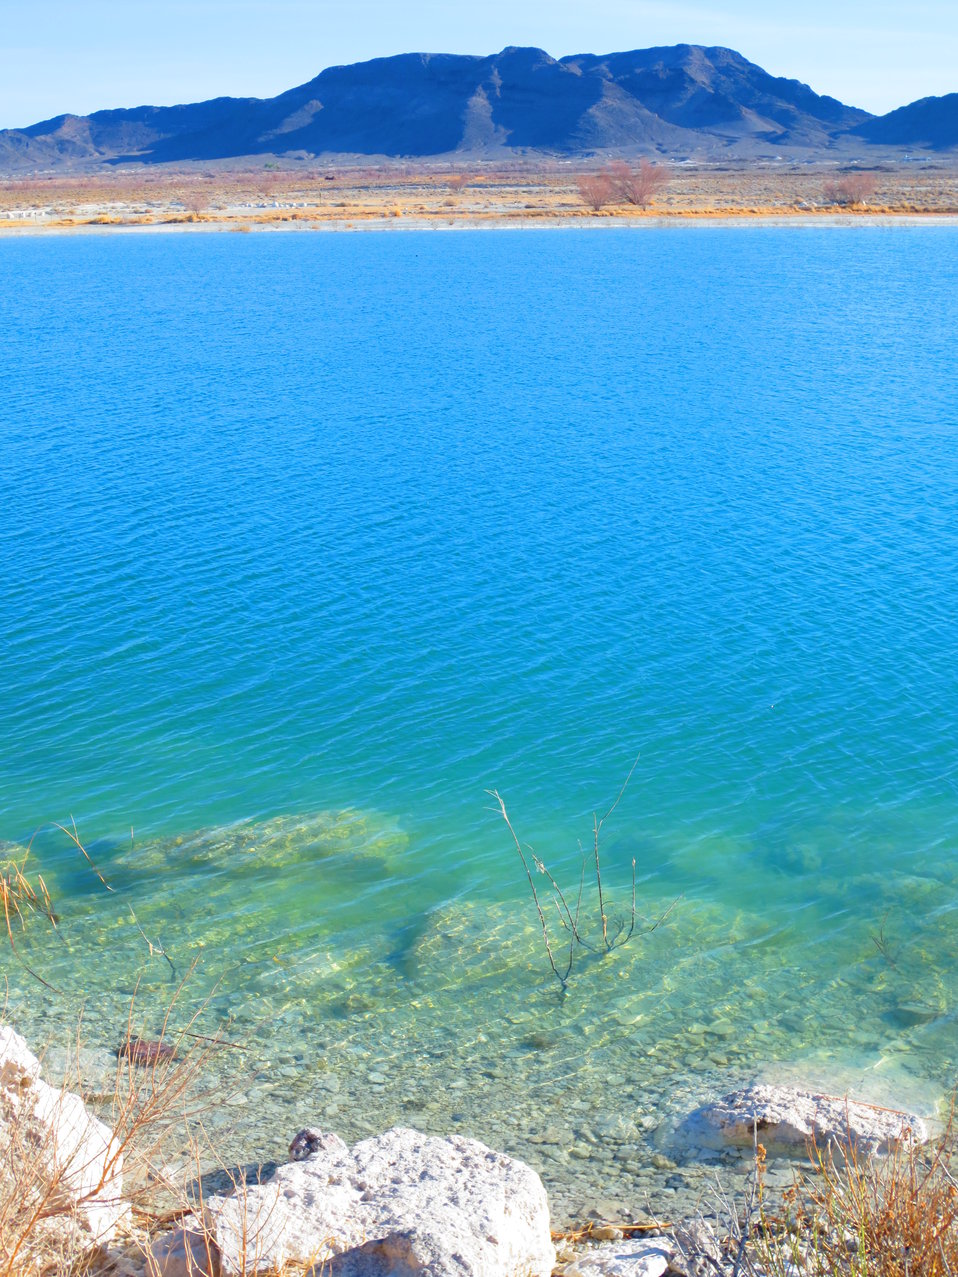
Crystal Reservoir

Vibrant blue 'fossil water' from springs on Ash Meadows NWR flow into Crystal Reservoir.